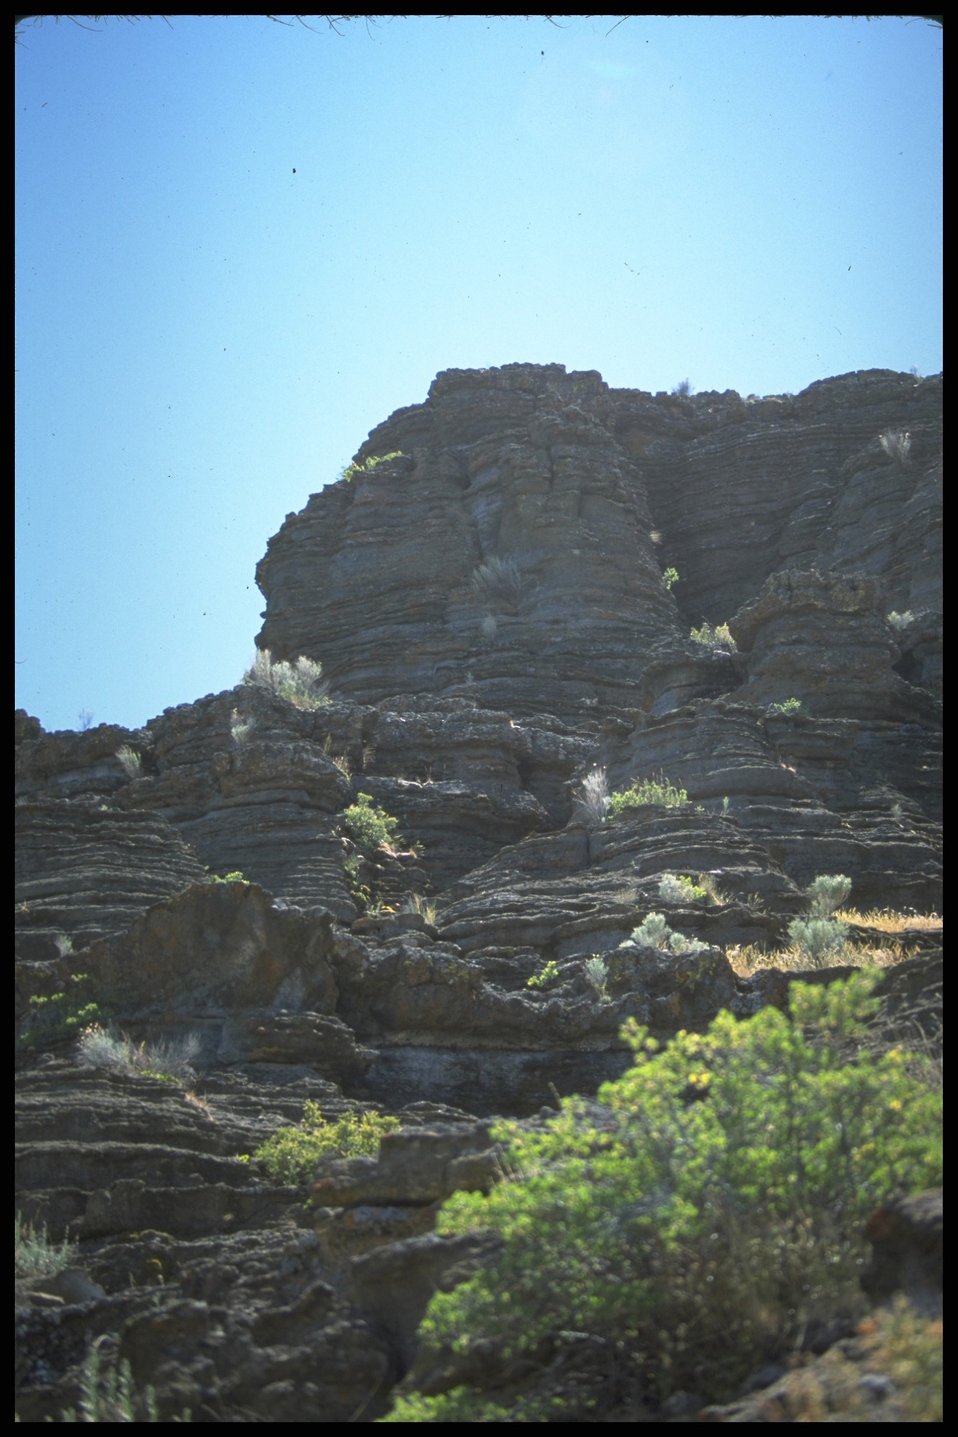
Scenic view, Ft. Rock. Lakeview District.